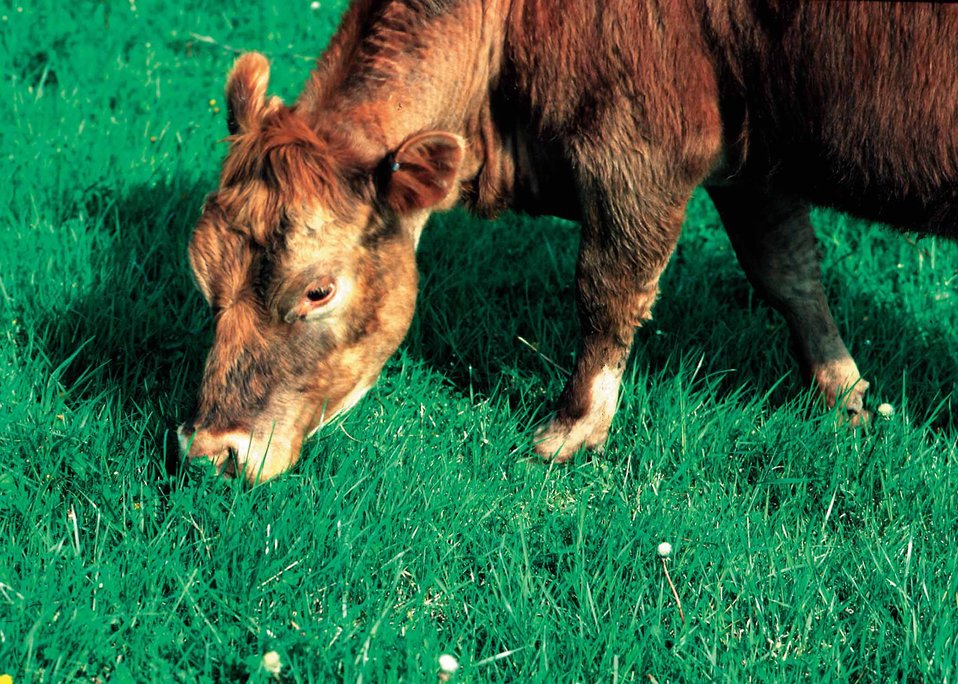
Cow eating grass.